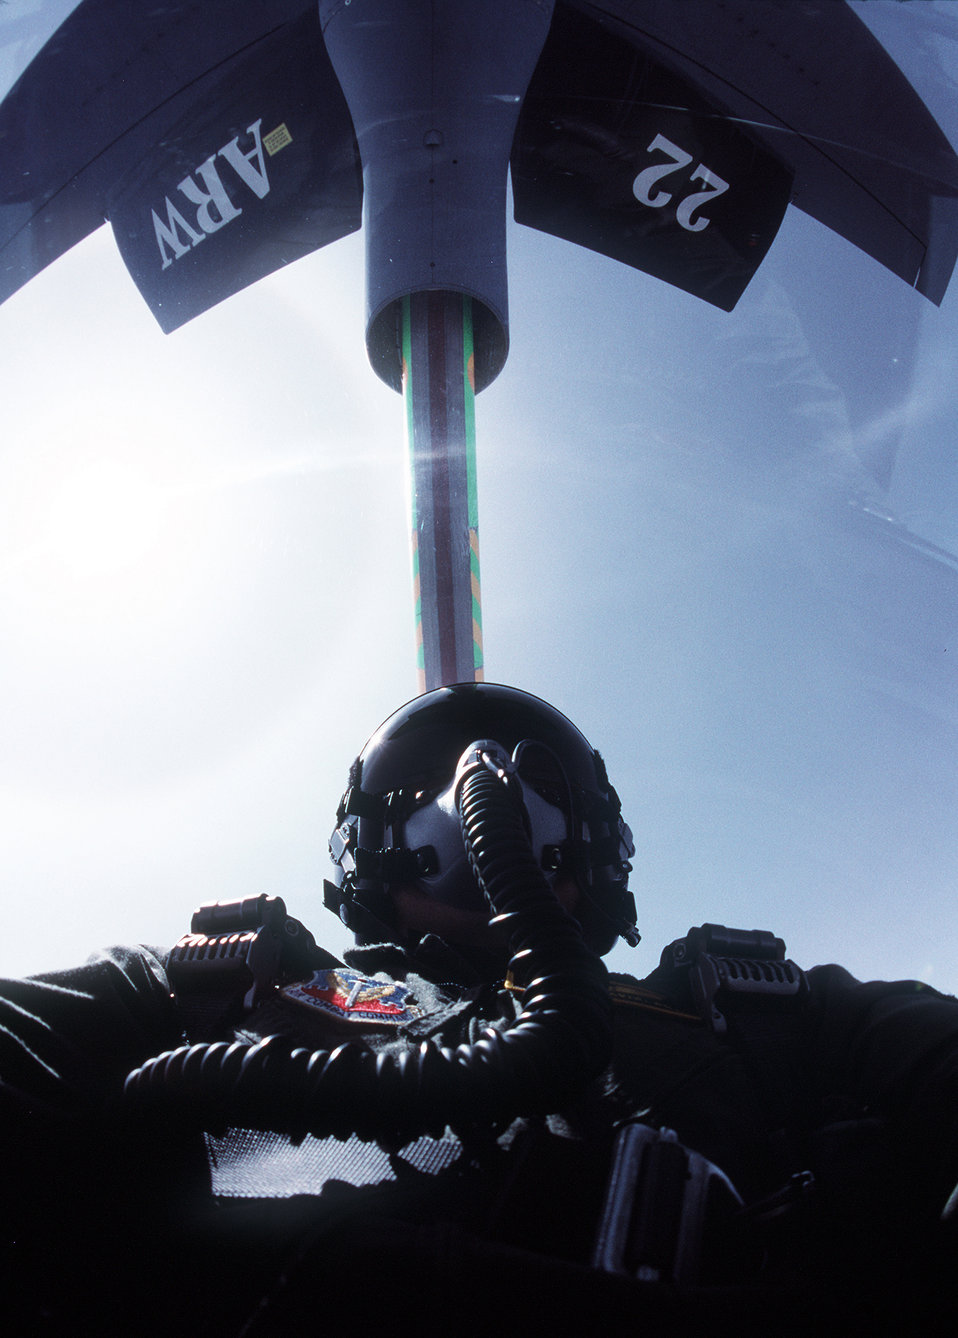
Fighting Falcon fueling

FILE PHOTO -- An F-16 pilot keeps his Fighting Falcon steady during an aerial refueling from a KC-135R Stratotanker of the 22nd Air Refueling Wing, McConnell Air Force Base, Kan. Clearly visible is the refueling boom and tail section of the KC-135R as fuel is transferred to the F-16. The fighter is assigned to the 78th Fighter Squadron, 20th Fighter Wing, Shaw AFB, S.C.